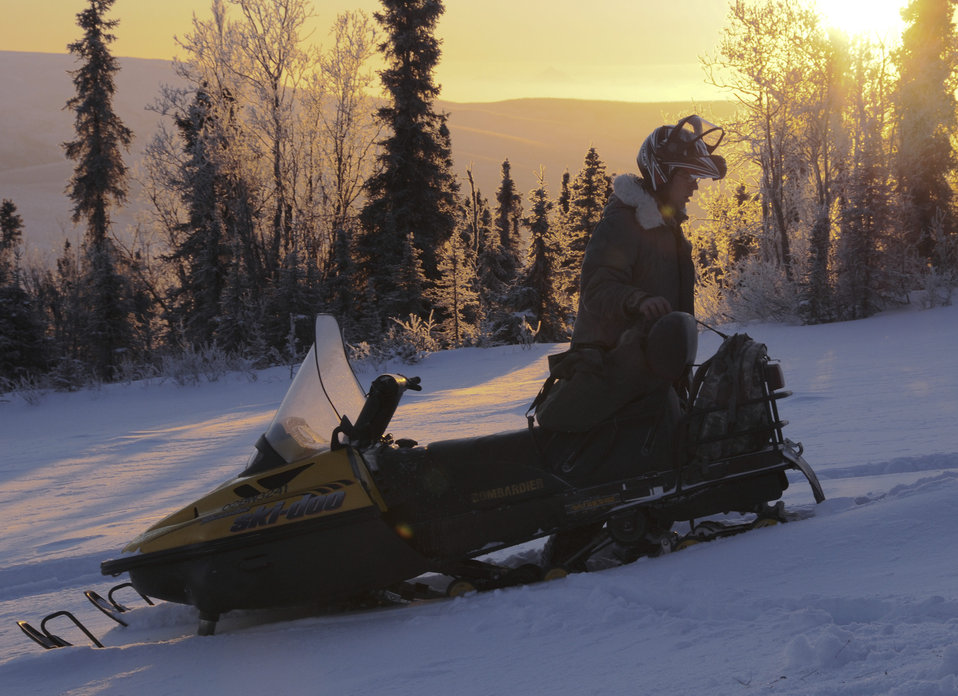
Eielson Airmen research alternative energy resources

Staff Sgt. Stewart Raring removes a solar pathfinder from a snow machine Dec. 16, 2008, at a remote operating facility in the Pacific Alaska Range Complex in Alaska. The solar pathfinder will measure the intensity of sunlight for an entire year to evaluate